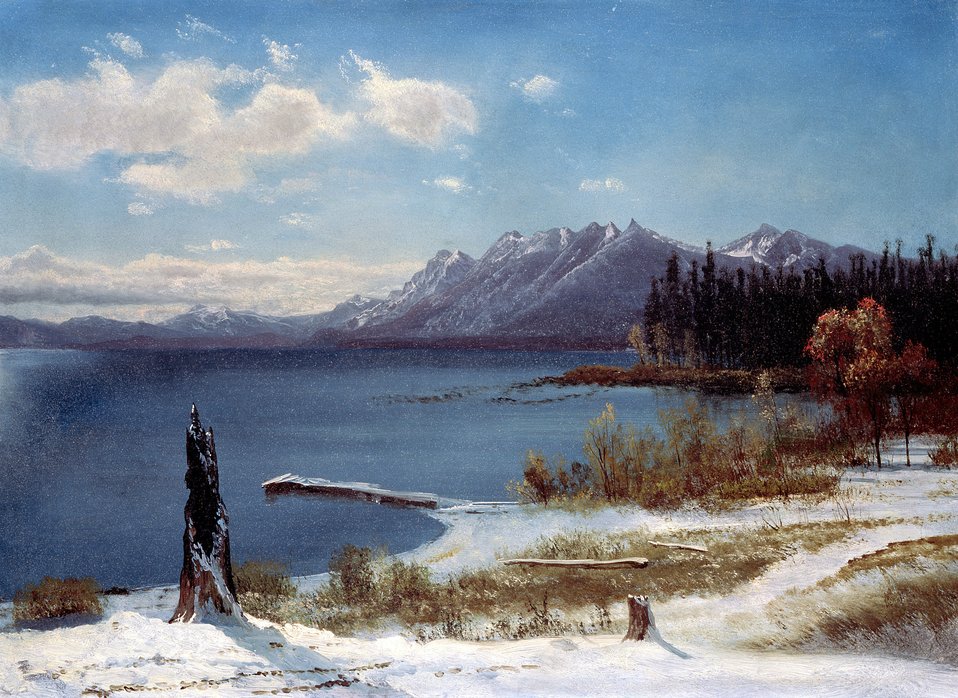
Albert Bierstadt - Lake Tahoe in winter